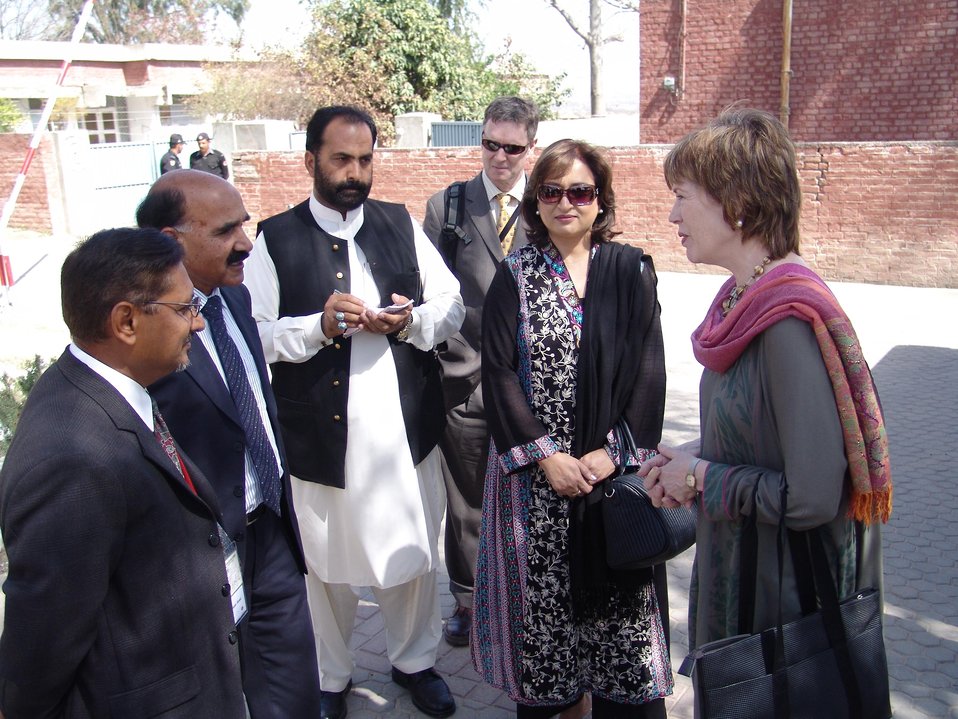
Rural Health Center Care for Mothers and Newborn Children

Gujar Khan, March 6, 2012 – Dr. Marilyn Wyatt, wife of U.S. Ambassador Cameron Munter talking with healthcare officals.